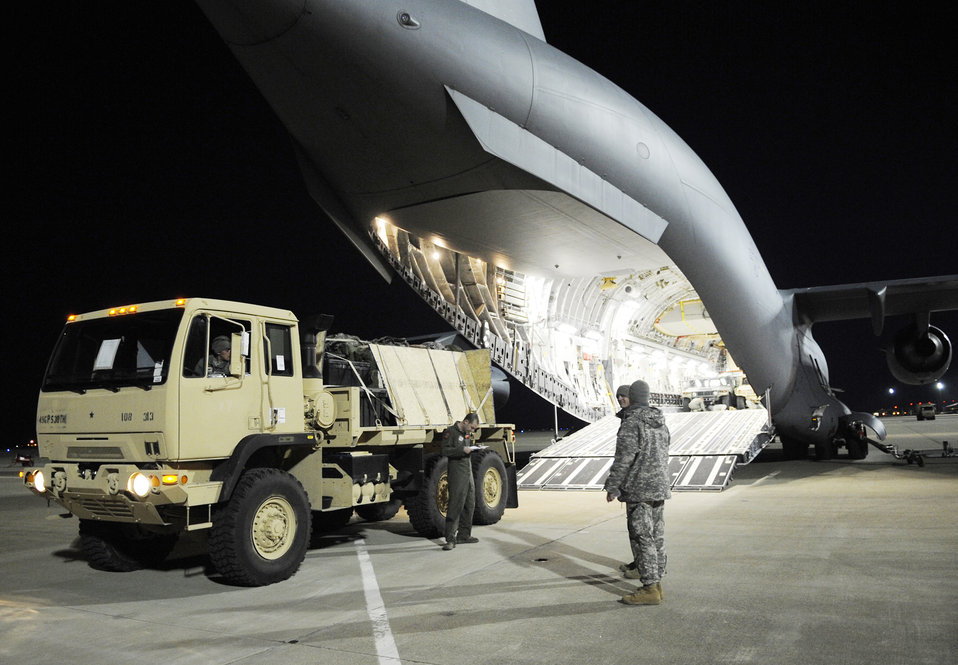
Airmen, Soldiers continue delivering troops, aid to Haiti

Cargo is loaded onto a C-17 Globemaster III Feb. 8, 2010, at Langley Air Force Base, Va. Through a joint effort by Airmen and Soldiers from Joint Base Langley-Eustis, servicemembers and cargo are transported to Haiti as part of Operation Unified Response.